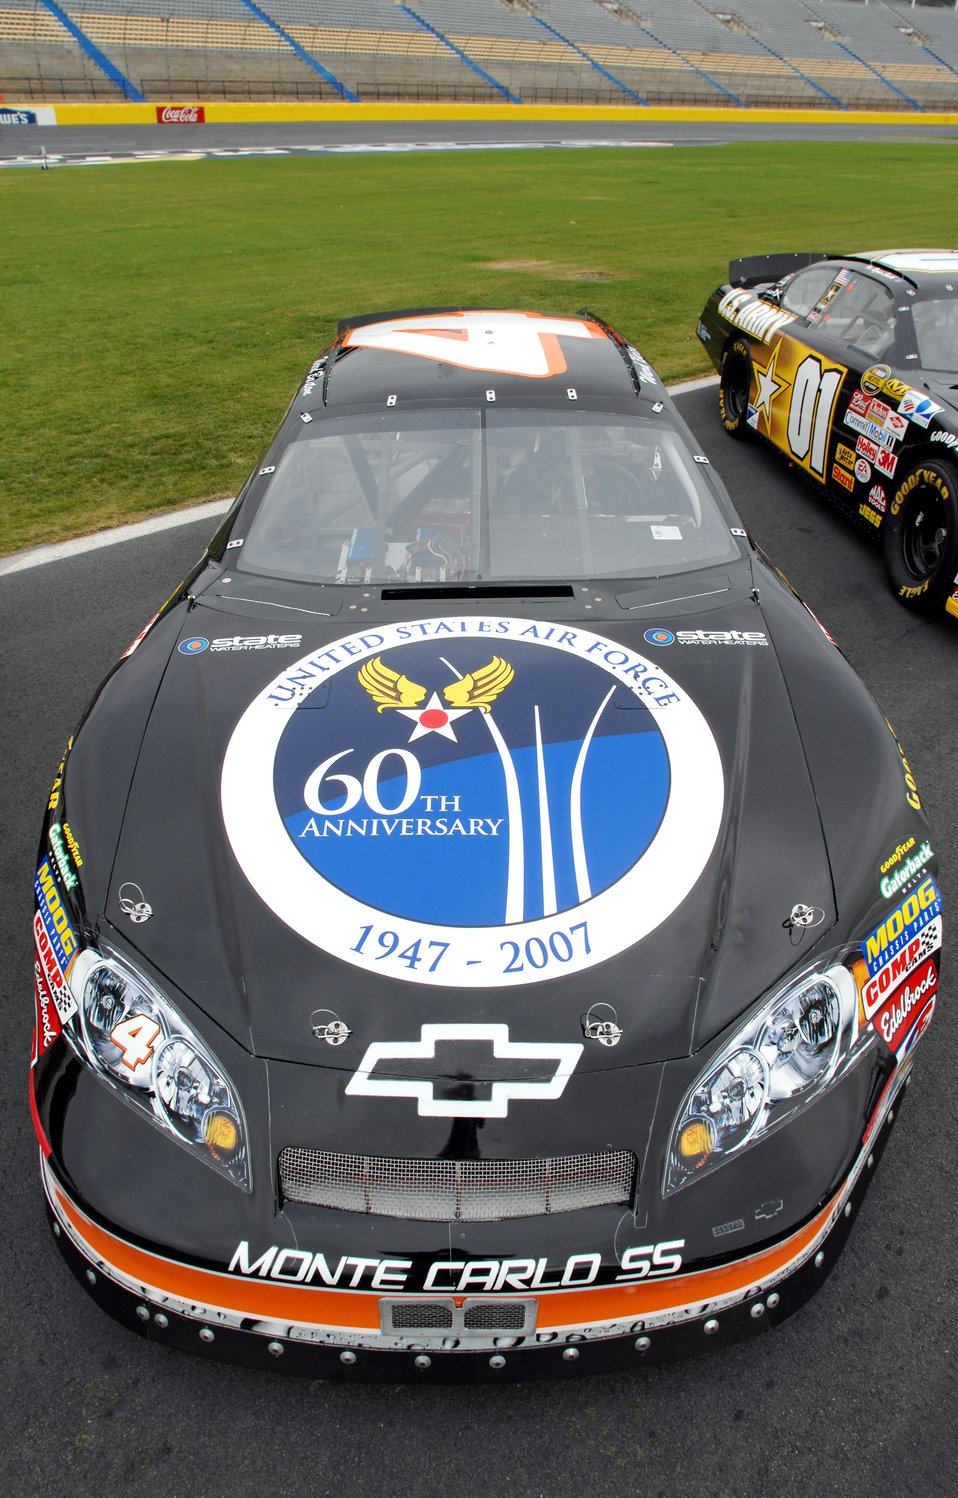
Honoring Armed Forces heroes

The NASCAR No. 4 car driven by Ward Burton sports the United States Air Force 60th Anniversary logo during unveiling ceremonies at Lowe's Motor Speedway in Charlotte, N.C., in recognition of the American Heroes Memorial Day Salute to the Armed Forces at the speedway May 8.